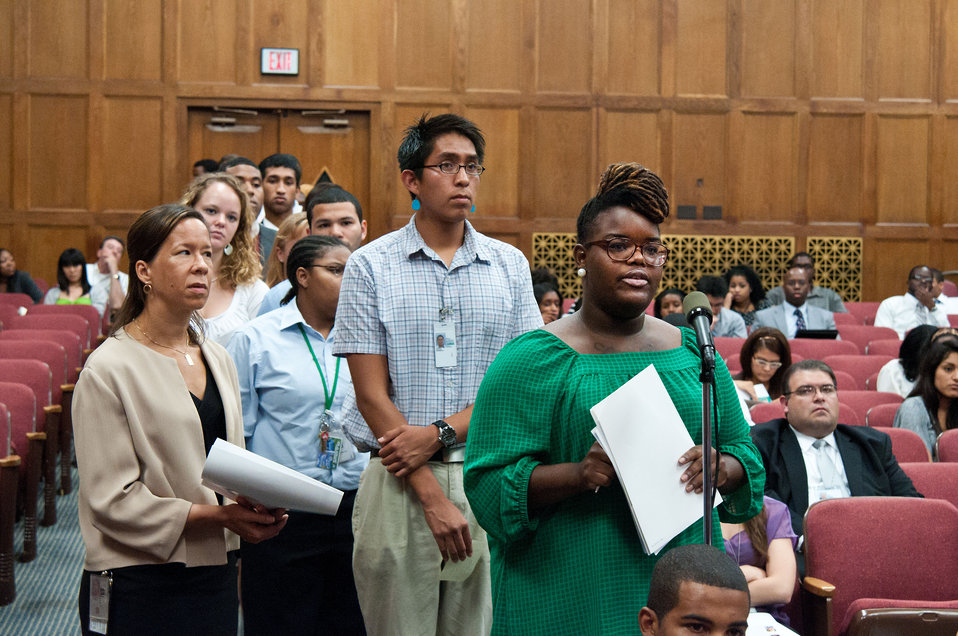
Interns at the United States Department of Agriculture (USDA) intern had an opportunity to ask questions of a panel of interns about their experiences during the USDA Intern Day and Panel Discussion, “Transforming USDA’S Tomorrow Today” in Washington, D.C., on Wednesday, July 11, 2012.